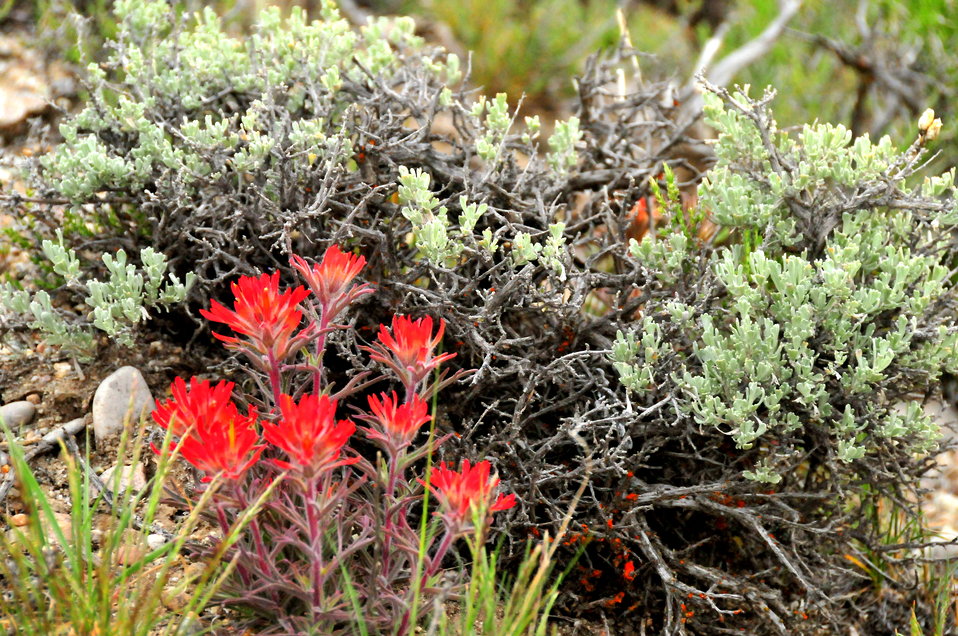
Wyoming sagebrush (Artemesia tridentata var. wyomingensis) and desert Indian paintbrush (Castilleja angustifolia) on Seedskadee NWR . The bright red of Indian paintbrush stands out against a backdrop of sage.